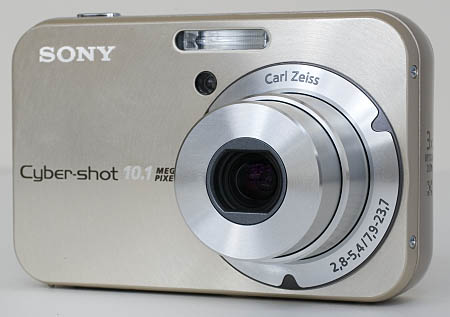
Sony Cyber-shot DSC-N2